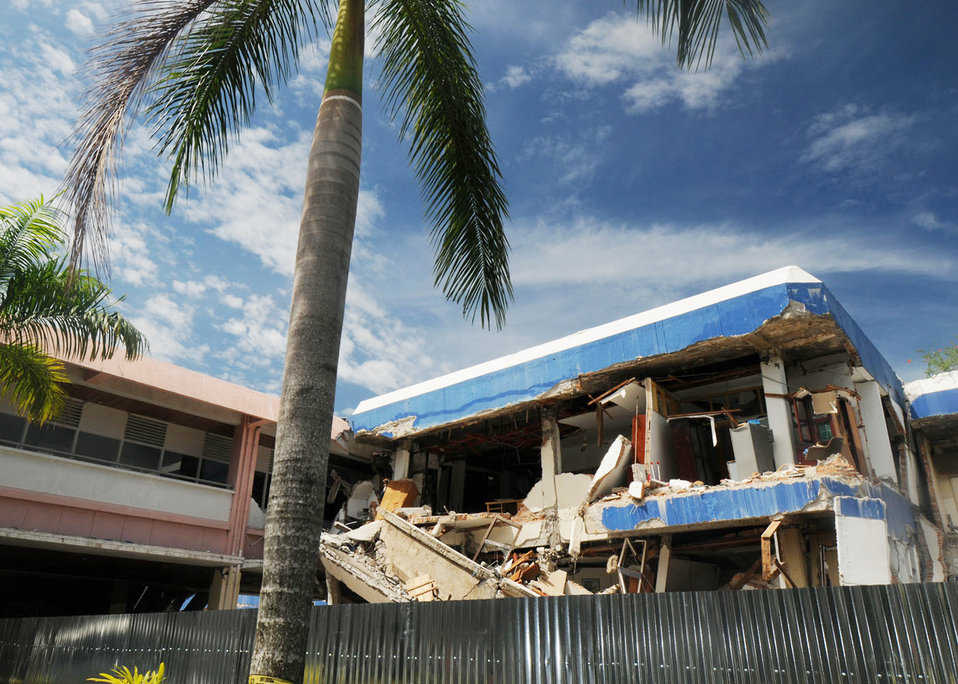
Interpreters key to Air Force efforts in Indonesia

An Air Force humanitarian assistance rapid response team field hospital is located next to the Djamil hospital, one of four hospitals in Padang, Indonesia, damaged during the recent earthquakes. HARRT members provide free medical assistance to those affected by the quakes.